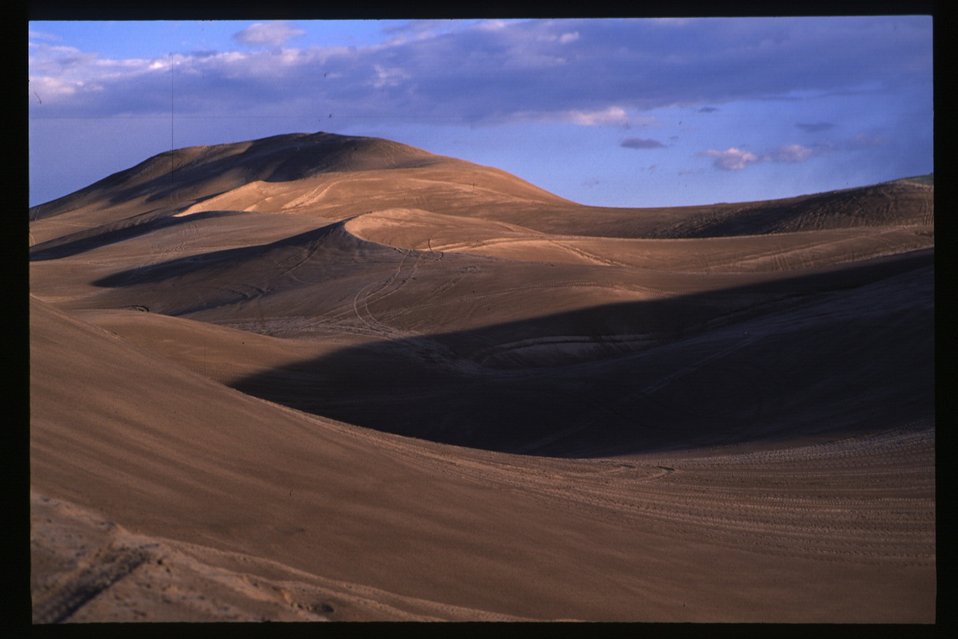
Recreation St Anthony Sand Dunes Overview Idaho Falls Field Office USRD Upper Snake River District